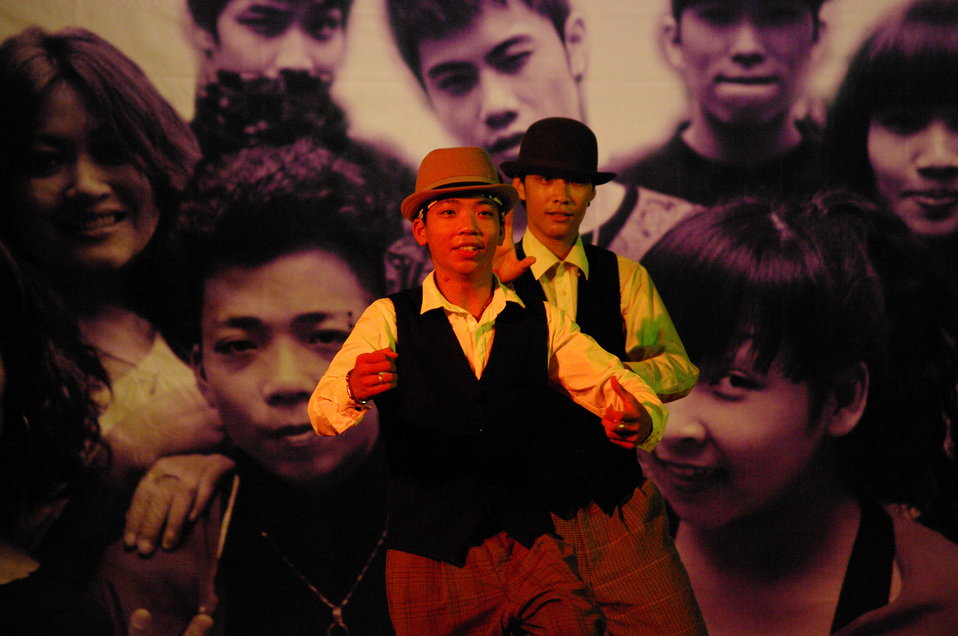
PEPFAR Sponsors Hip Hop to Stop the Spread of HIV